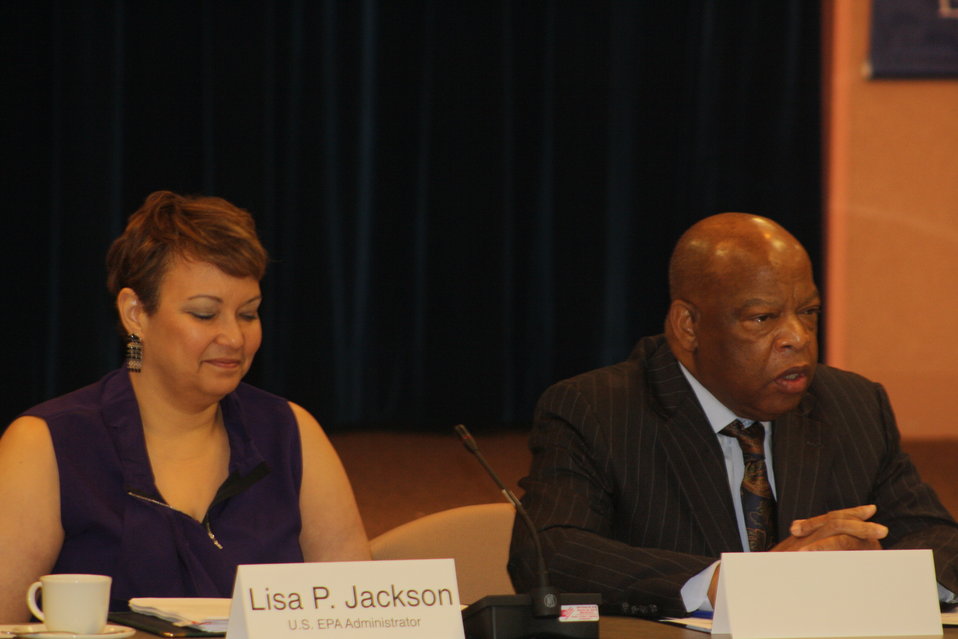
Faith-Based and Neighborhood Partnership launch at Atlanta's Carter Center